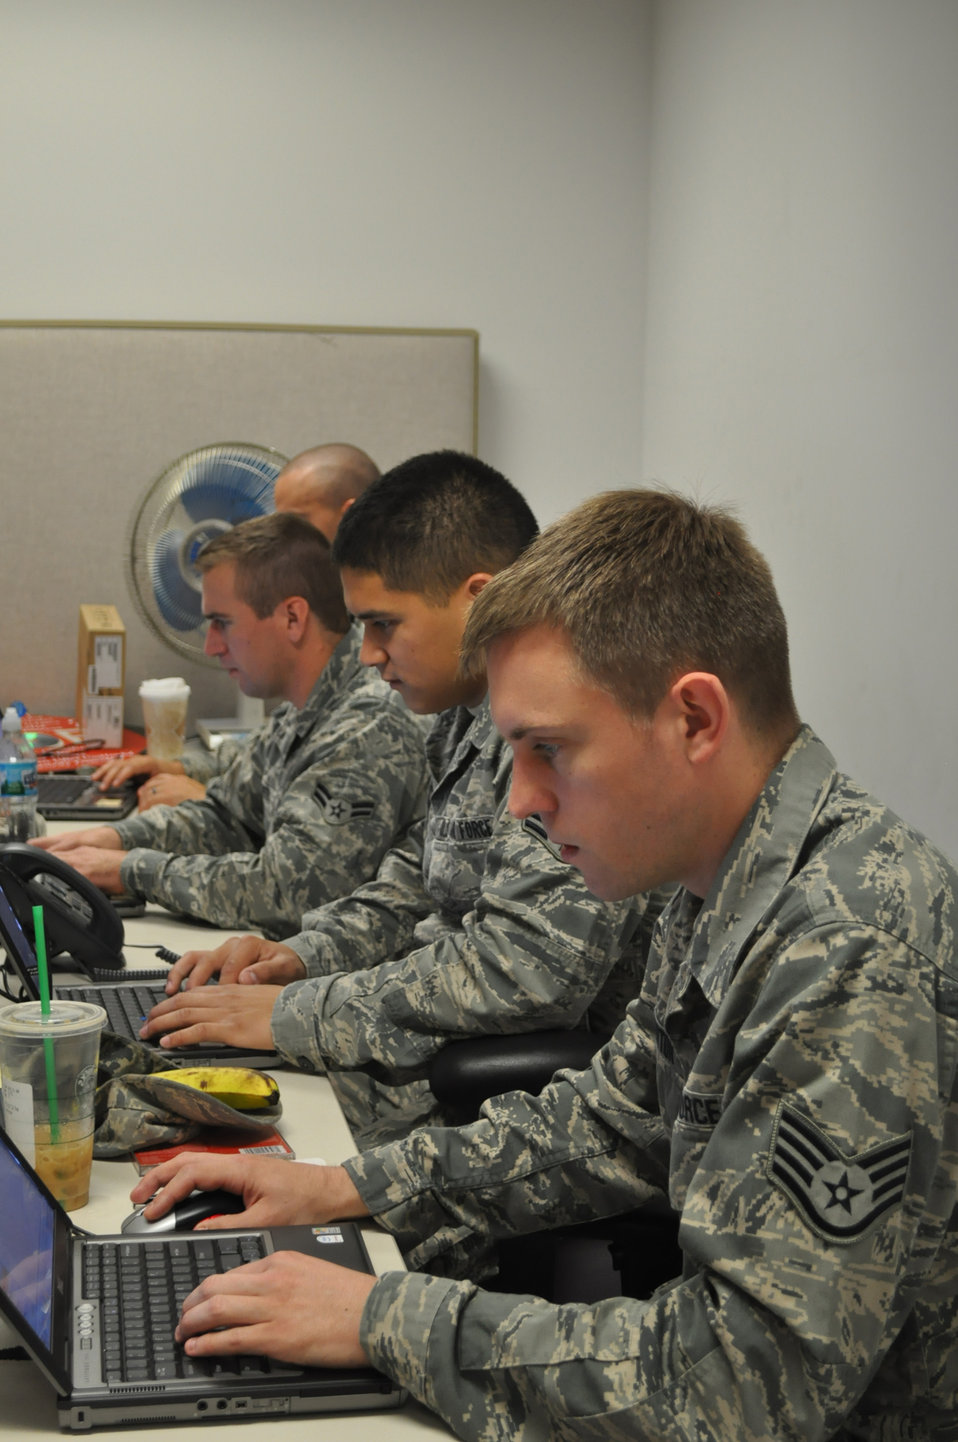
Cyber Nexus

Airmen from across the 67th Network Warfare Wing compete May 19, 2011, in Cyber Nexus, the wing's first force-on-force competition.